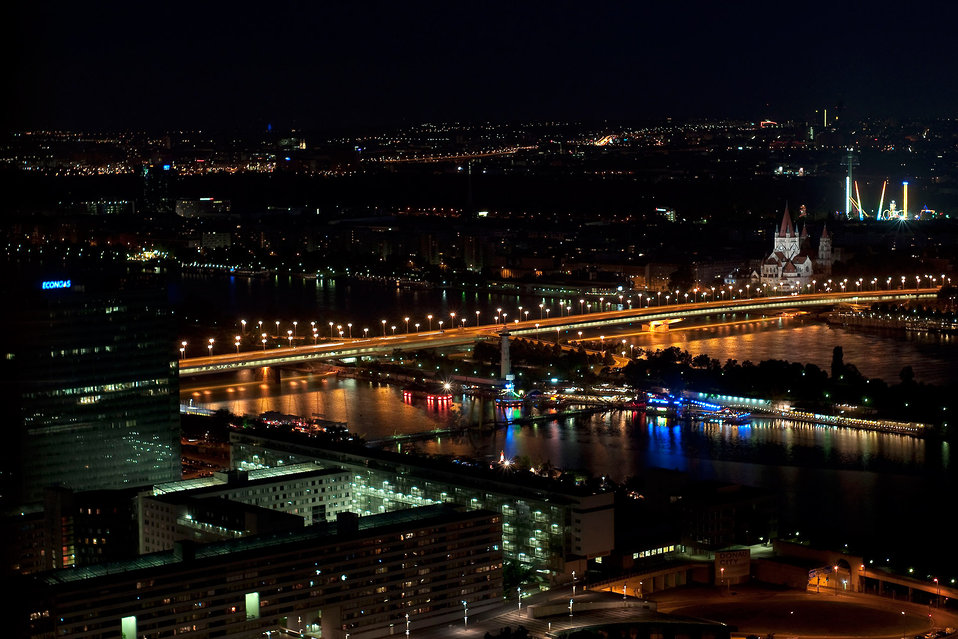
Empire bridge & copa cagrana at night.